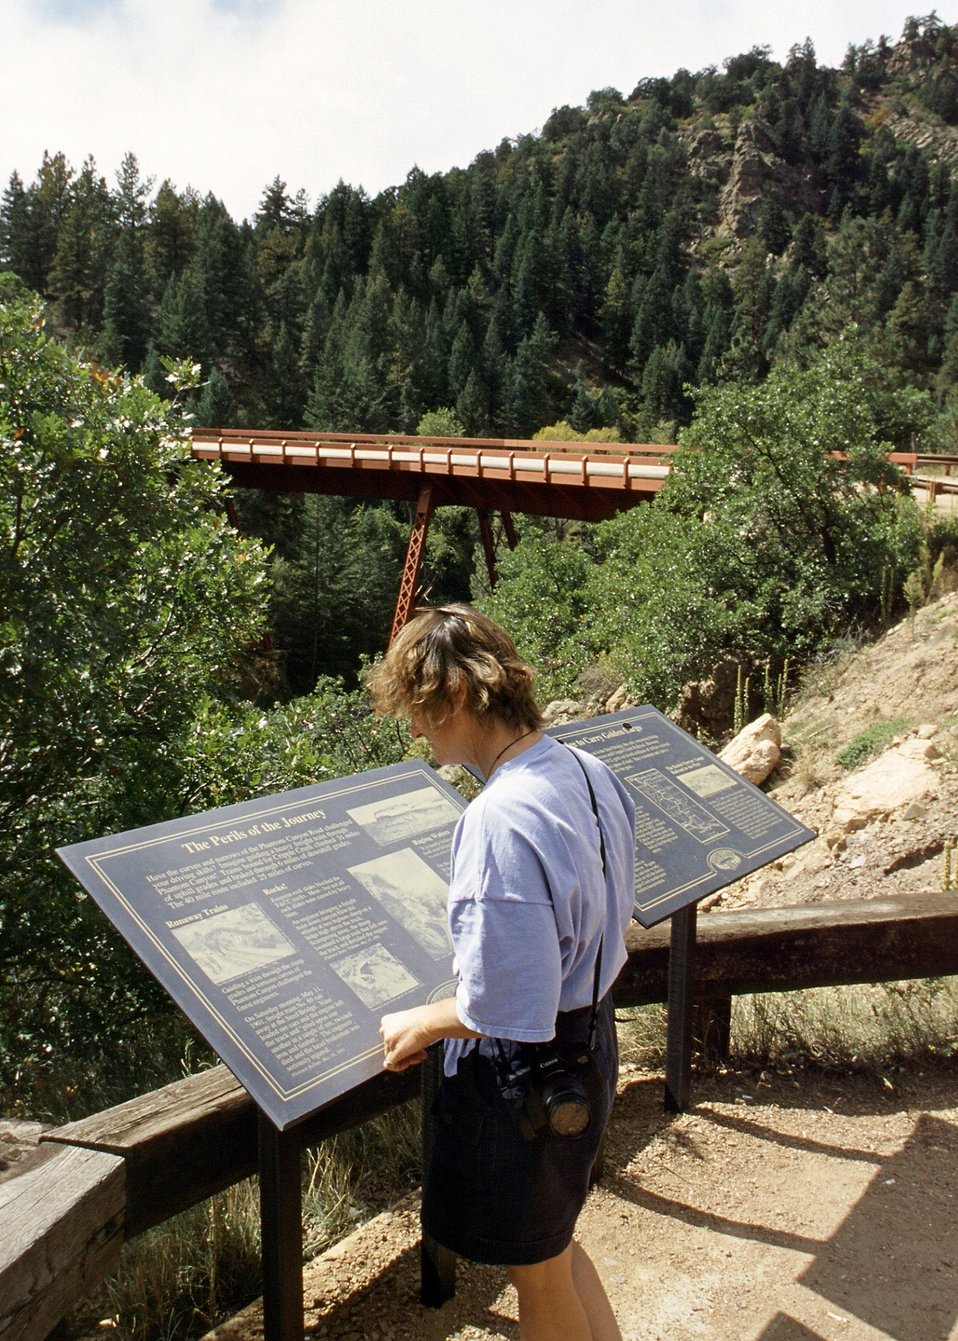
Sheet bridge Interp. sign